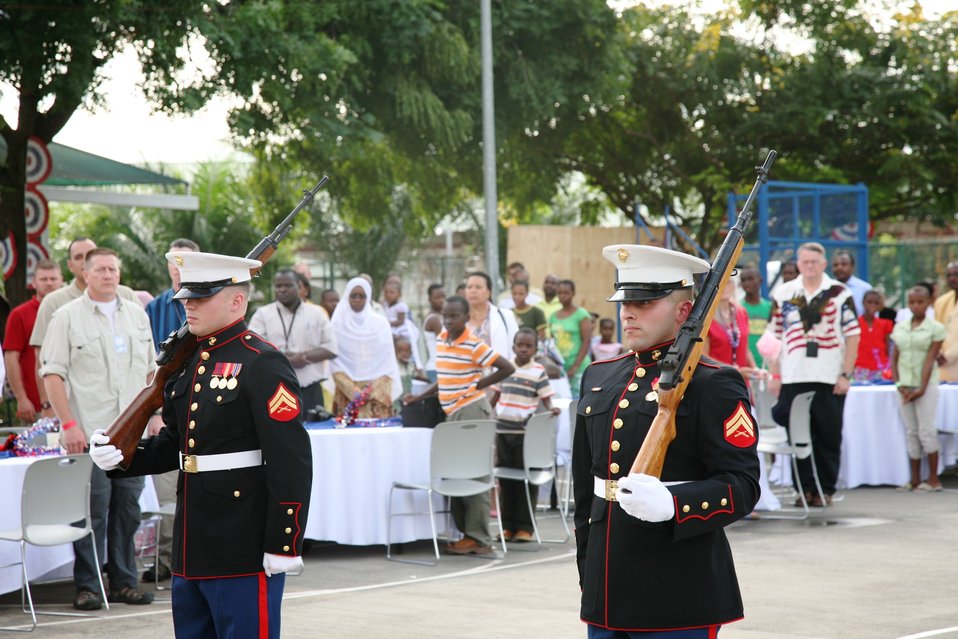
July 4th Celebration at U.S. Embassy in Tanzania

U.S. Marines present the colors at the U.S. Embassy Dar Es Salaam in Tanzania community's U.S. Independence Day celebration that brought together over 200 local Tanzanians and their families including State, USAID, CDC, and Peace Corps on June 30, 2010, in Dar Es Salaam, Tanzania.